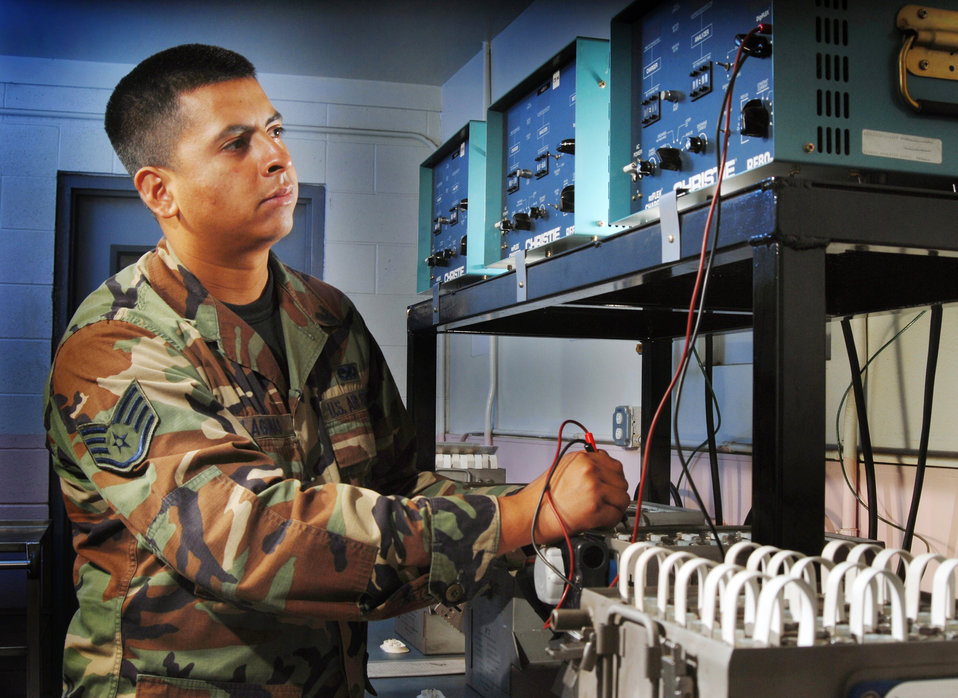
Get a charge out of work

Staff Sgt. Abraham Lagunas, an aircraft mechanic, uses a multi-meter to check the lead cell voltage on a C-17 Globemaster III nickel-cadmium battery while it's being recharged at March Air Reserve Base, Calif. on Sept. 3. Sergeant Lagunas is an air reserve technician from the 452nd Maintenance Squadron.